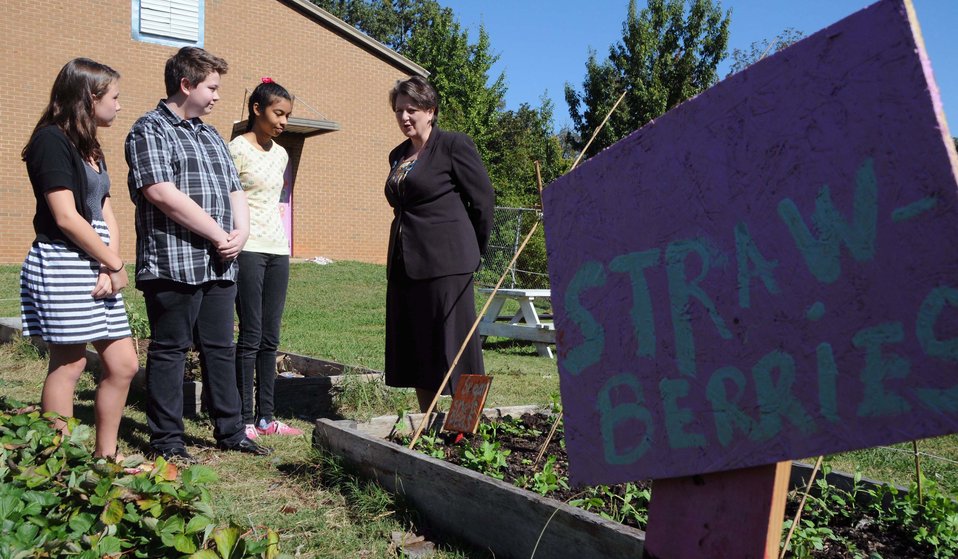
Agriculture Deputy Secretary Kathleen Merrigan tours a school garden during a visit to Carl G. Renfroe Middle School in Decatur, Ga., during National School Lunch Week and Farm to School Month on Friday, October 14 , 2011.